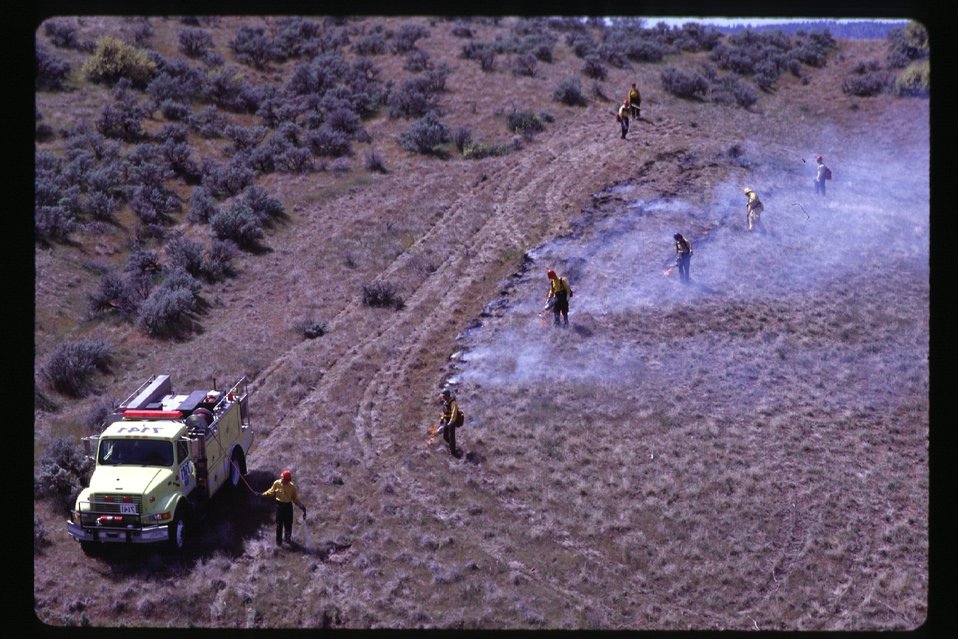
Prescribed burn Fire break Four Rivers Field Office LSRD Lower Snake River District